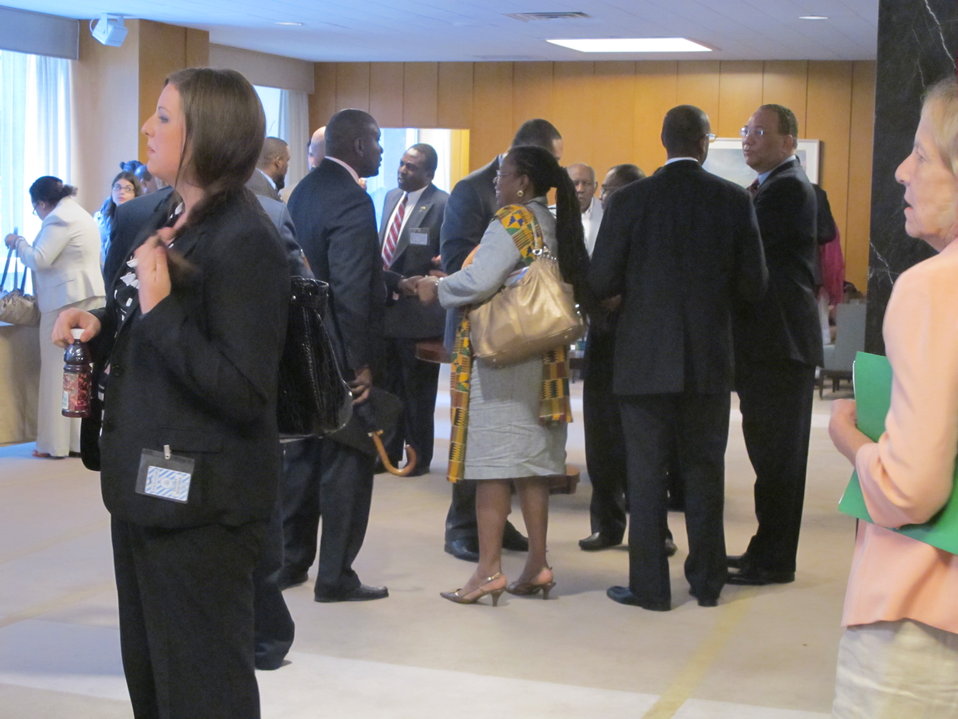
Participants in the Caribbean Conference Utilize Break for Networking

Participants of the U.S. Policy in the Caribbean Conference utilize the designated break as a perfect opportunity for networking in the Delegate’s Lounge at the U.S. Department of State in Washington, D.C., on June 27, 2011.